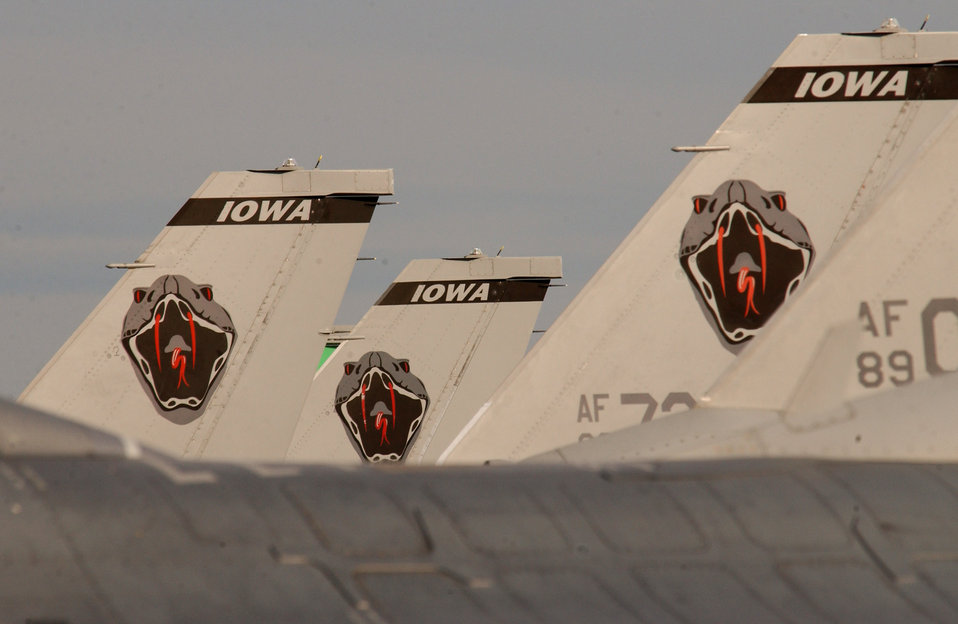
Northern Edge aims for air, sea dominance

Three F-16 Fighting Falcons from the Iowa Air National Guard sit on the flightline at Eielson Air Force Base, Alaska, during exercise Northern Edge 2006 on Tuesday, June 6, 2006. The joint training exercise hosted by Alaskan Command is one of a series of U.S. Pacific Command exercises that prepare joint forces to respond to crises in the Asian Pacific region.